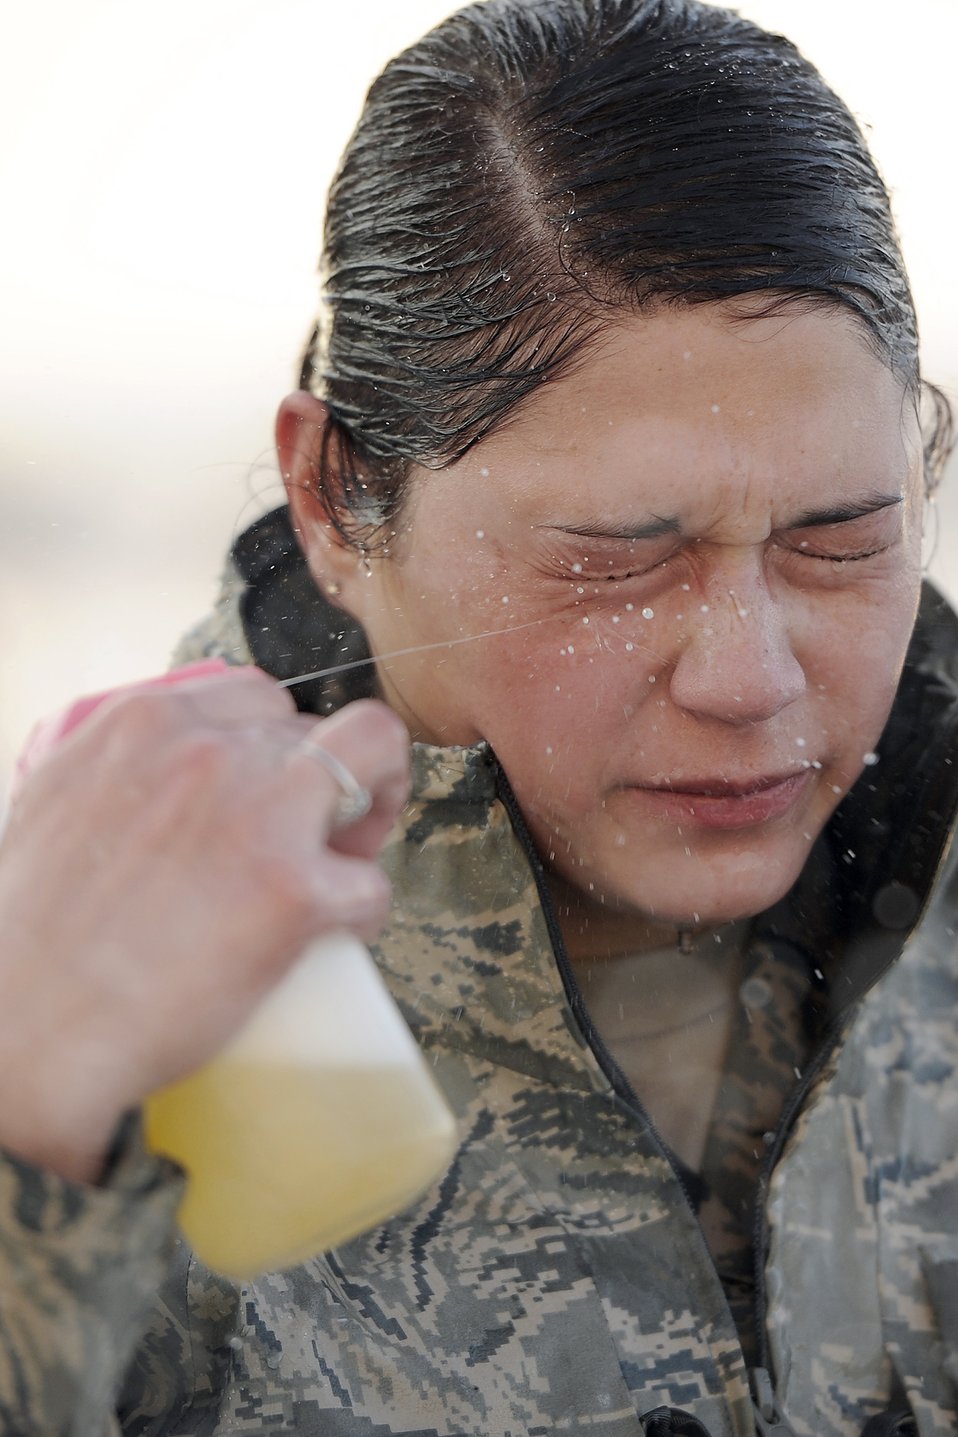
Oleoresin Capsicum spray training

Airman 1st Class Kristan Harrison sprays soap in her eyes to counteract the effects of Oleoresin Capsicum spray Jan. 5, 2011, at Hill Air Force Base, Utah. OC spray is a non-lethal spray, similar to pepper spray, used to temporarily incapacitate individuals. All security forces Airmen receive the OC training when they first arrive at their squadron. Airman Harrison is assigned to the 75th Security Forces Squadron.